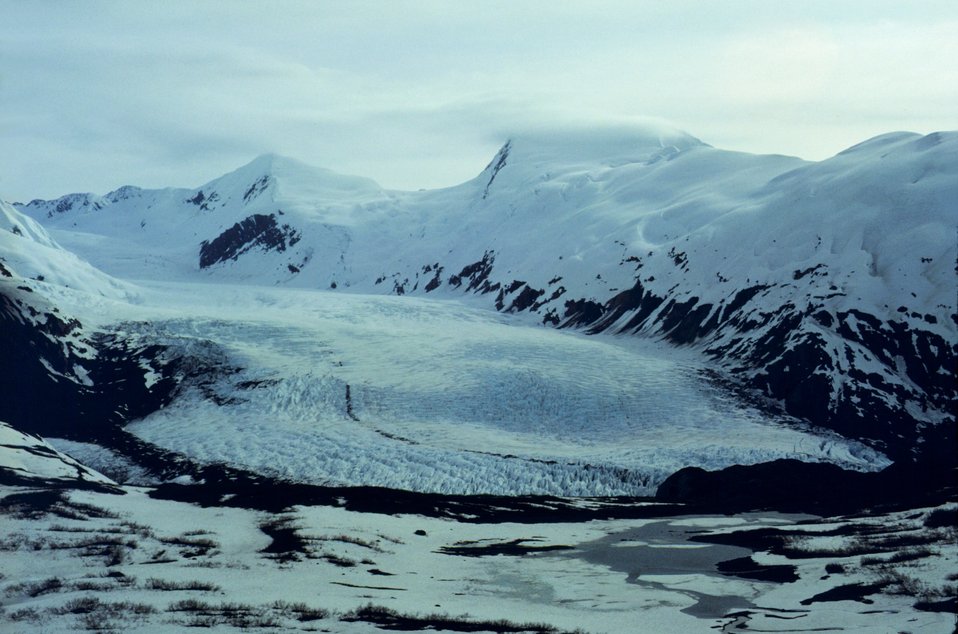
Portage Glacier.